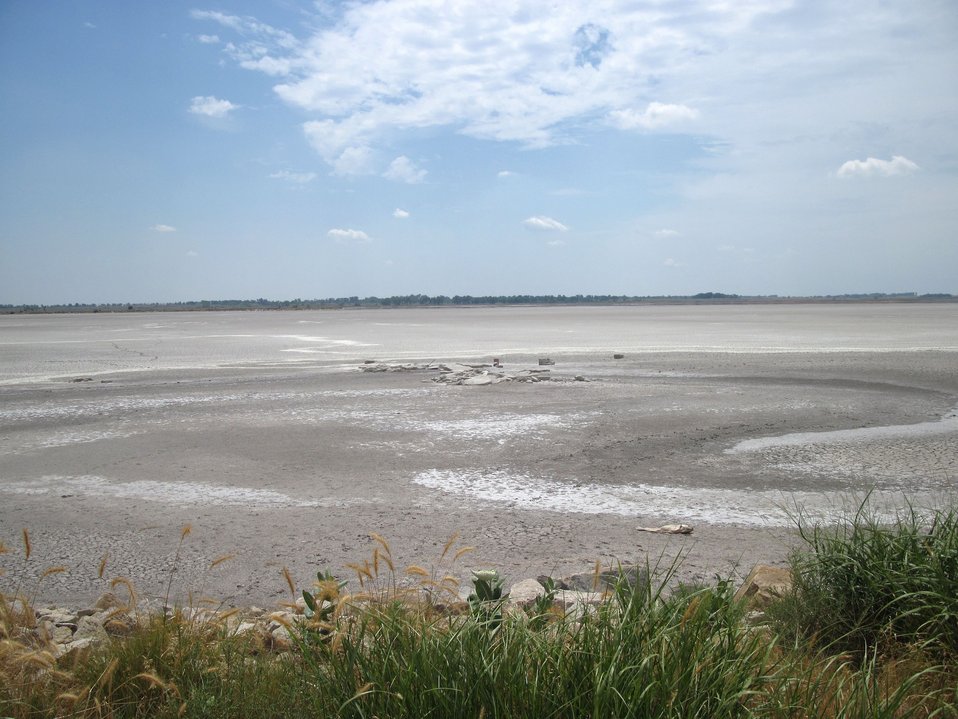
Big Salt Marsh,Quivira Refuge, Aug 2011

At Quivira National Wildlife Refuge, a photo shows the marsh as it appears after a period of extended and severe drought.